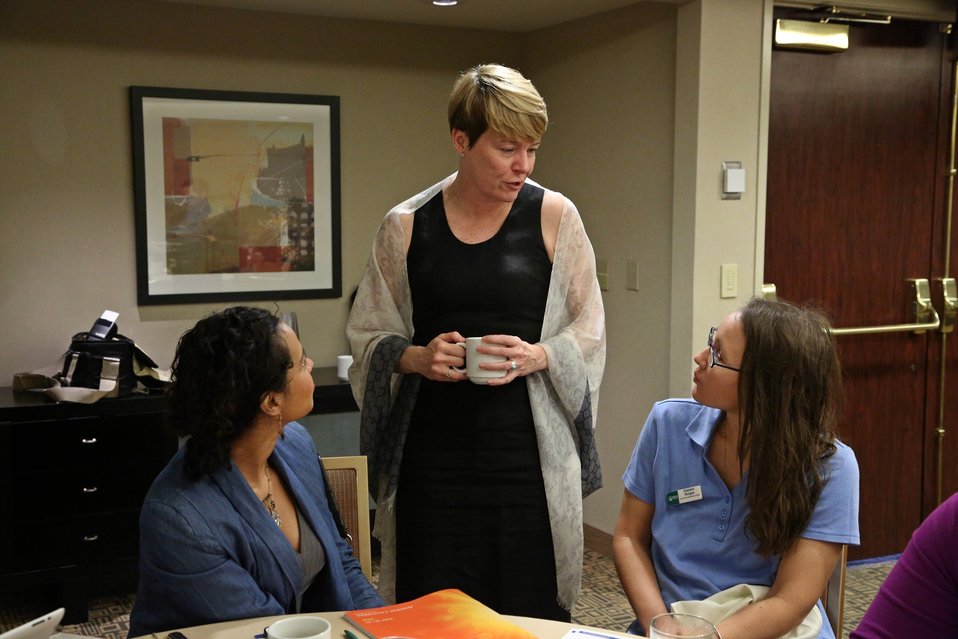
Women in Solar Breakfast 5

Dr. Cheryl Martin, Director, Advanced Research Projects Agency-Energy chatting with attendees at the Women in Solar Breakfast.